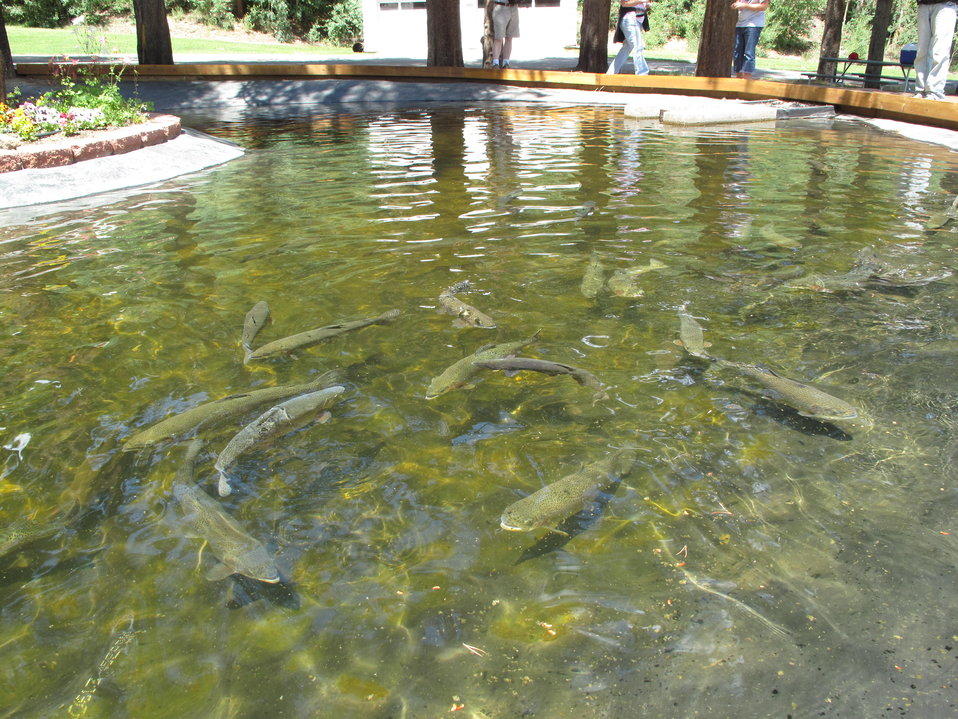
Trout in Display Pond

The trout located in the display pond are 3 years-old and very large.